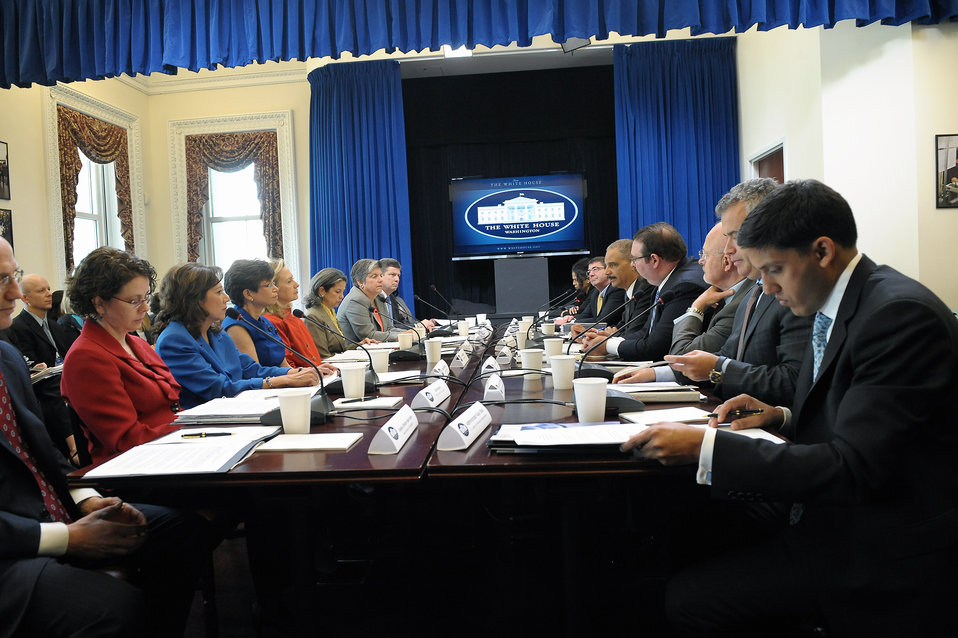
Secretary Clinton Chairs the Interagency Task Force to Monitor and Combat Trafficking in Person

U.S. Secretary of State Hillary Rodham Clinton chairs the President’s Interagency Task Force to Monitor and Combat Trafficking in Persons in Washington, D.C. on March 15, 2012.